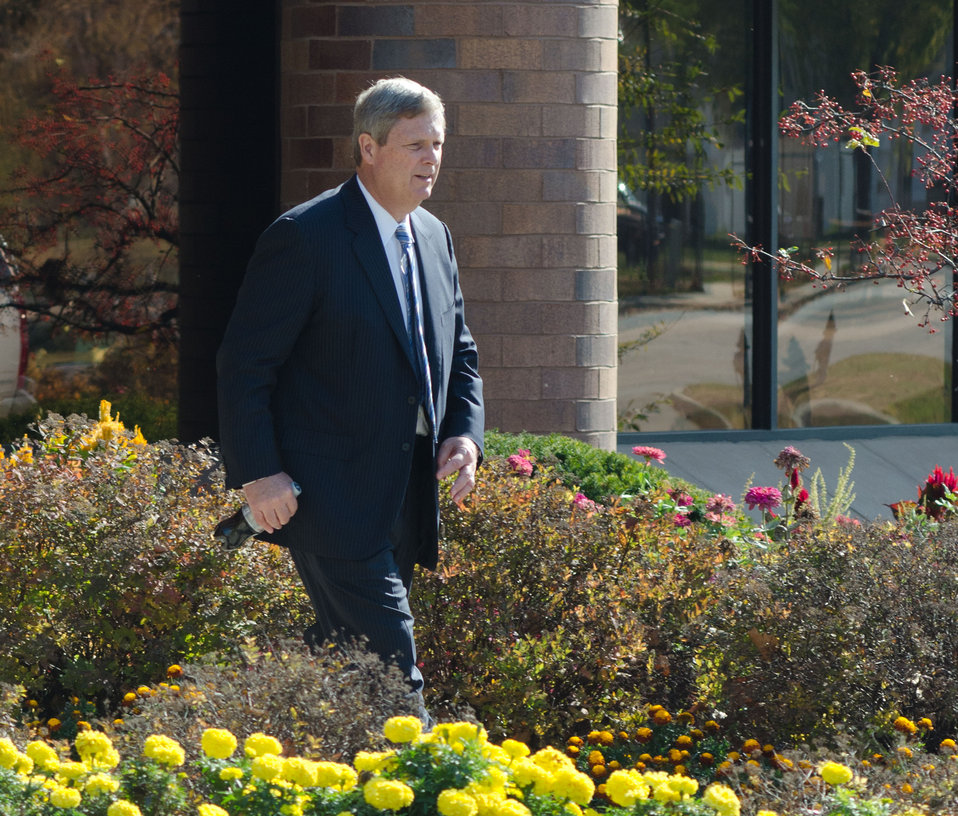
U.S. Department of Agriculture (USDA) Secretary Tom Vilsack departs the National Agricultural Statistics Service office in Springfield, IL, after visiting the employees to talk with them about current and future cutbacks across the department, on Wednesday, November 2, 2011.